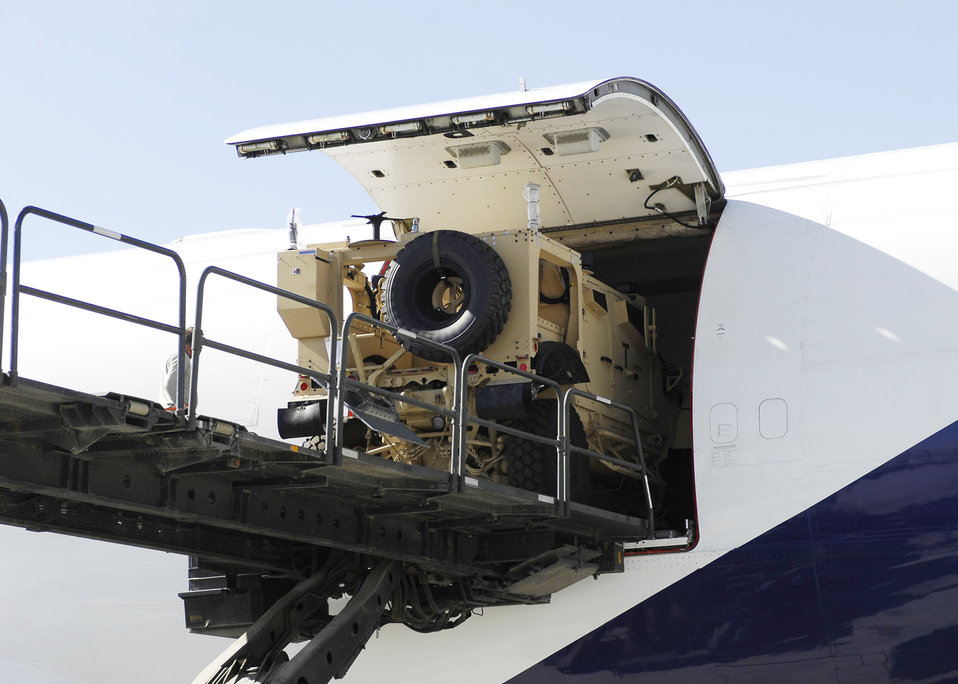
Bagrams new arrivals

The 455th Expeditionary Aerial Port Squadron receives a group of mine-resistant ambush-protected all-terrain vehicles delivered Nov. 9, 2009, by a Boeing 747 at Bagram Airfield, Afghanistan. The M-ATVs support mounted patrols, reconnaissance, security, convoy protection, communications, command and control and combat service support. The M-ATV is designed to replace the up-armored Humvee in Afghanistan.